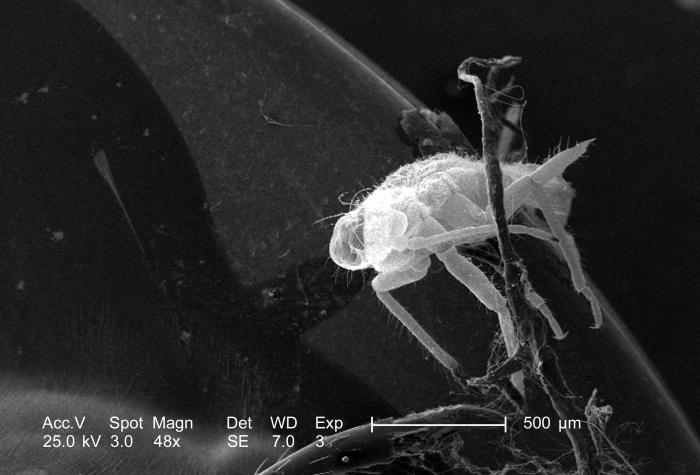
At this relatively low magnification of 48x, this scanning electron micrograph (SEM) revealed the presence of a small, unidentified insect on the exoskeletal surface of what was an unidentified dragonfly that was found deceased on the grounds of the Decatur, Georgia suburbs. Though the arthropod found here appeared to be 'residing' on the dragonfly's body, it also may merely have been picked up by the dragonfly, as was the case with other debris such as pollen granules, or general vegetative matter, and not living as a parasitic inhabitant. See PHIL 11268 for a colorized version of this image.